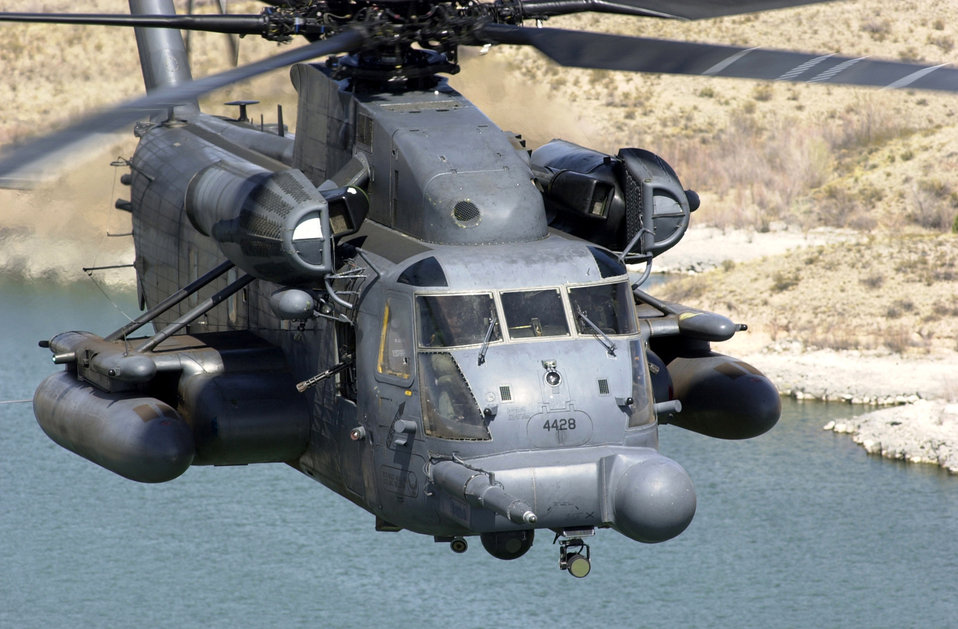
Paving the way

KIRTLAND AIR FORCE BASE, N.M. -- A 58th Special Operations Wing, 551st Special Operations Squadron, MH-53J Pave Low IIIE flies a training mission. The MH-53J Pave Low IIIE heavy-lift helicopter is the largest, most powerful and technologically advanced helicopter in the Air Force inventory. The terrain-following and terrain-avoidance radar, forward-looking infrared sensor, inertial navigation system with global positioning system, along with a projected map display enable the crew to follow terrain contours and avoid obstacles, making low-level penetration possible.